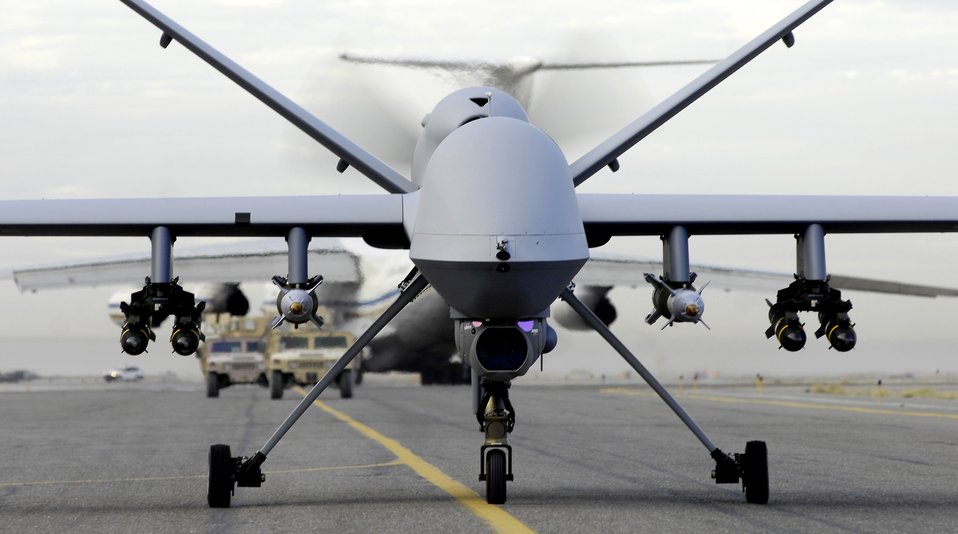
Reaper drops first precision-guided bomb, protects ground forces

A fully armed MQ-9 Reaper taxis down an Afghanistan runway Nov. 4. The Reaper has flown 49 combat sorties since it first began operating in Afghanistan Sept. 25. It completed its first combat strike Oct. 27, when it fired a Hellfire missile over Deh Rawod, Afghanistan.